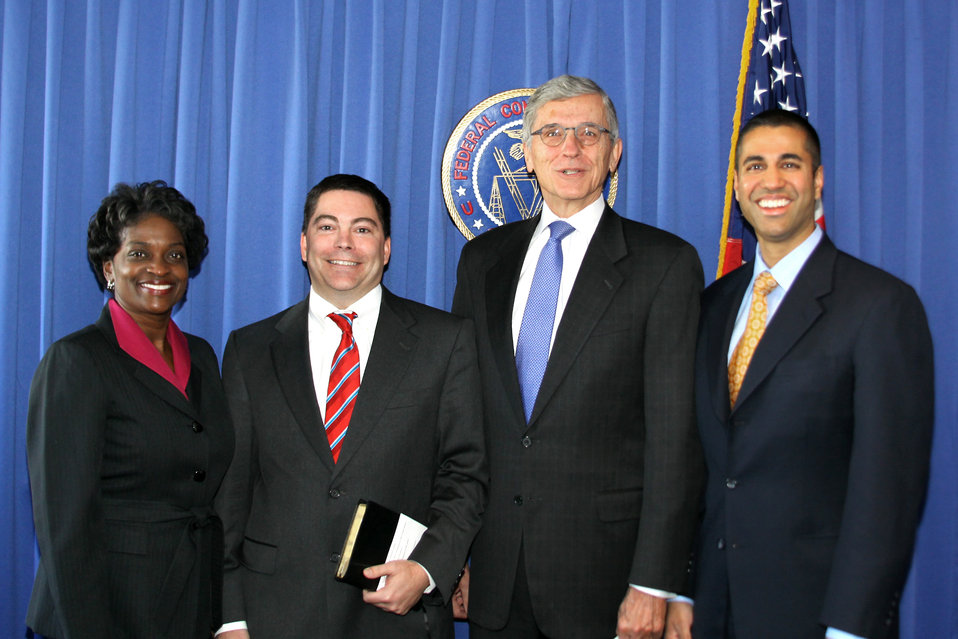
11.4.2013 Commissioner Michael O’Rielly Swearing In Cermony

Chairman Tom Wheeler, Commissioner Mignon Clyburn, Commissioner Ajit Pai, & Commissioner O'Rielly at O'Rielly's swearing in ceremony.